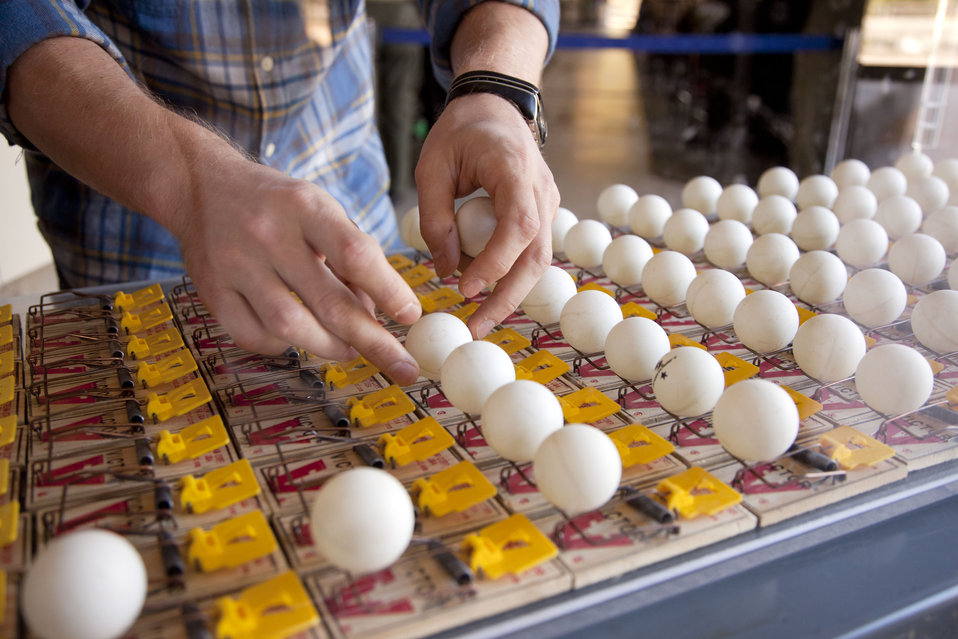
An adult volunteer sets up ping pong balls on mouse traps to illustrate what atoms in a nuclear reaction look like.